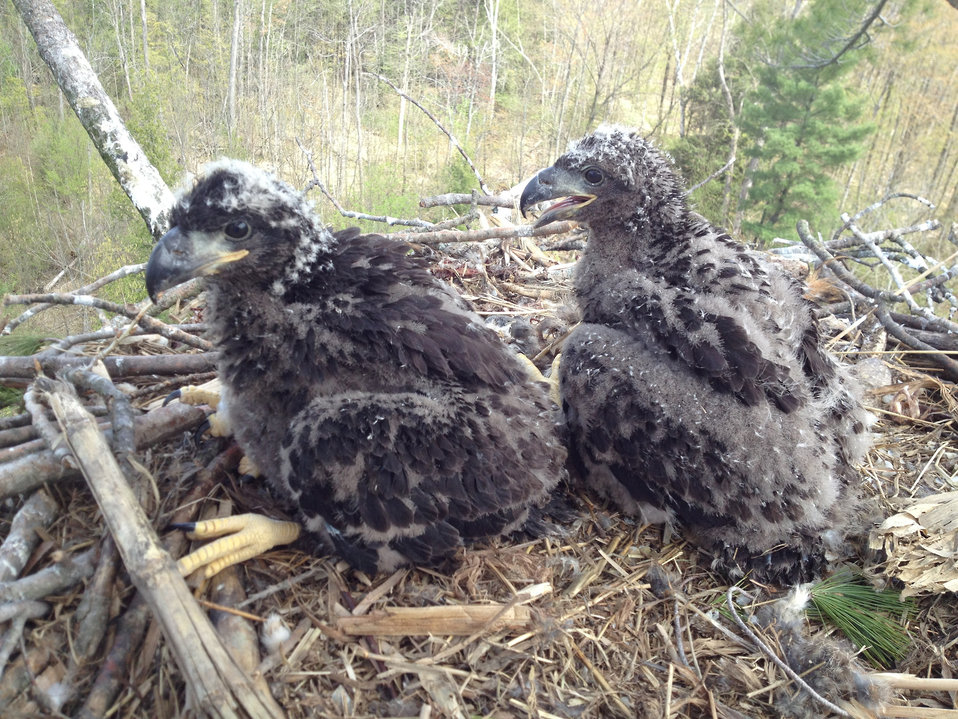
Bald eagle eaglets May 7, 2013. Eaglets are taken from the nest. On the ground blood and feathers are collected for contaminant analysis. Measurements are taken to determine age. Eaglets are then returned to the nest.

See www.fws.gov/midwest/eagle

Photo by USFWS; Jeremy N. Moore